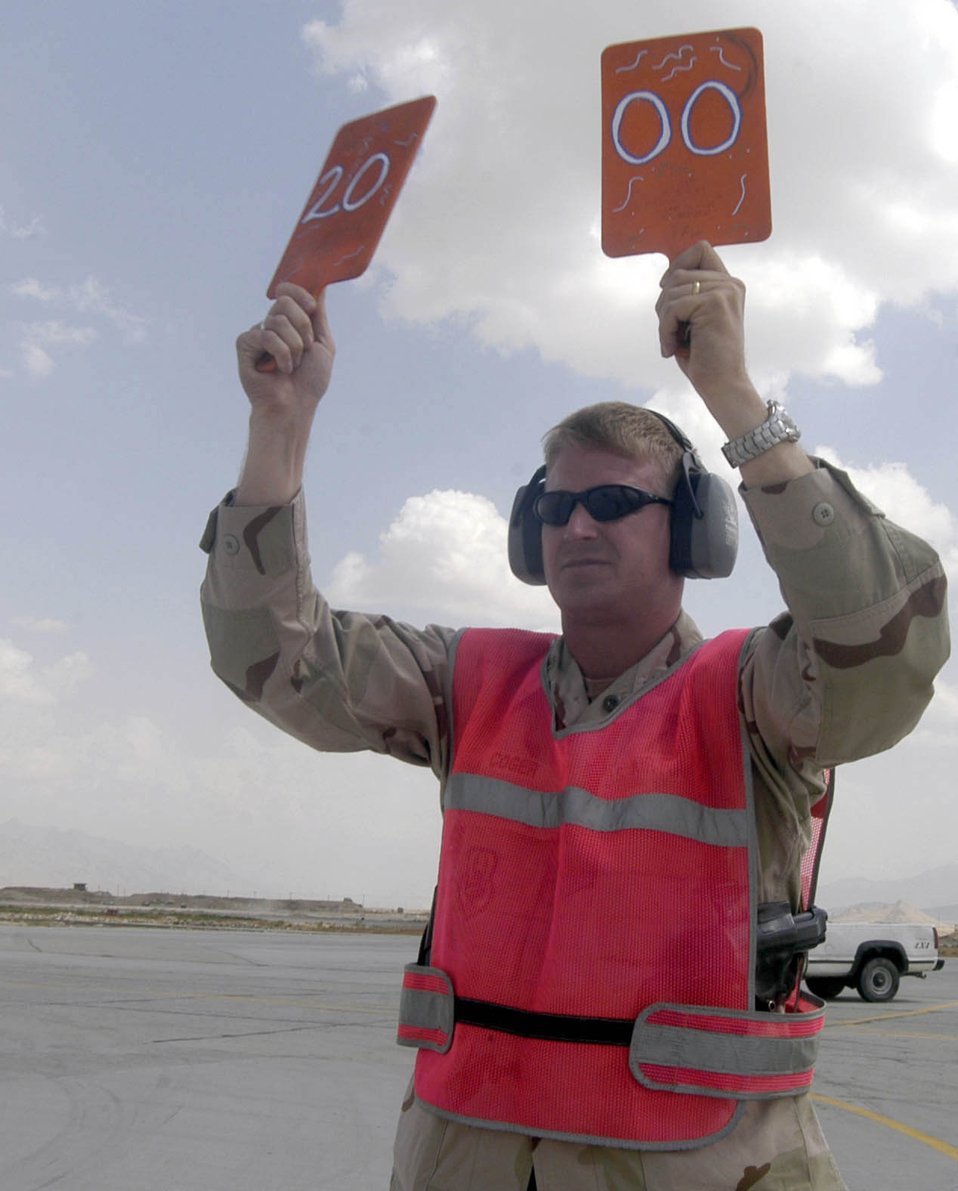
Bagram team parks 2,000th transient aircraft

Maj. Timothy Coger uses specially marked paddles to direct a C-17 Globemaster III into its parking spot at Bagram Air Base, Afghanistan, Sept. 2. The C-17, from the 62nd Airlift Wing at McChord Air Force Base, Wash., was the 2,000th transient aircraft to land at Bagram for Air Expeditionary Forces 1 and 2, which began May 7. That number equates to an average of 17 aircraft transiting Bagram daily. Major Coger is the commander of the 455th Expeditionary Maintenance Squadron at Bagram and is deployed from Spangdahlem Air Base, Germany.